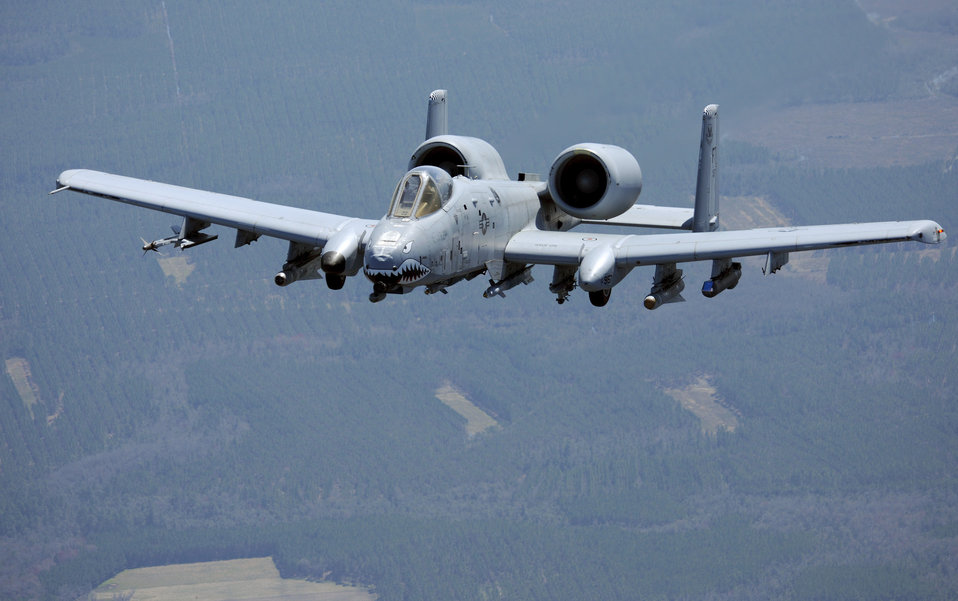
Enhanced Mojave Viper Exercise

An A-10C Thunderbolt II from Moody Air Force Base, Ga., as the one pictured, will participate in the Enhanced Mojave Viper Exercise in Arizona later in August. Moody A-10Cs will provide close air support to U.S. Marine Corps and Navy forces during the three-week exercise.